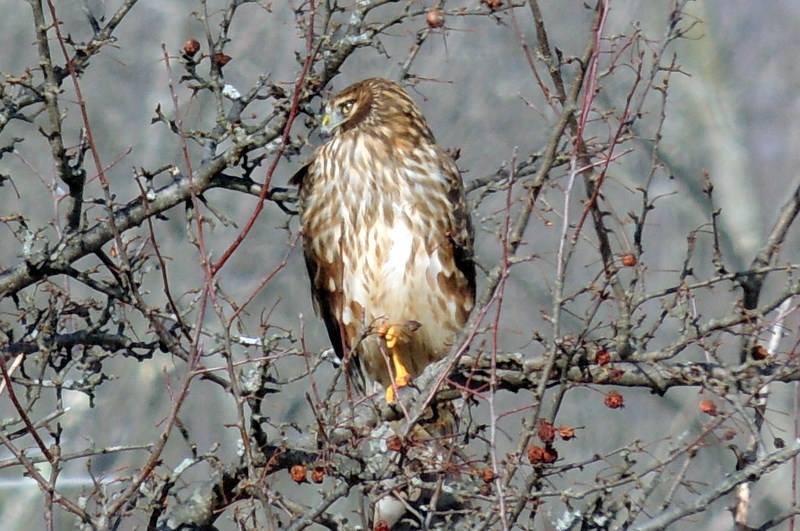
Harrier hawk

Walkill National Wildlife Refuge, New Jersey Photo by Ray Kramer